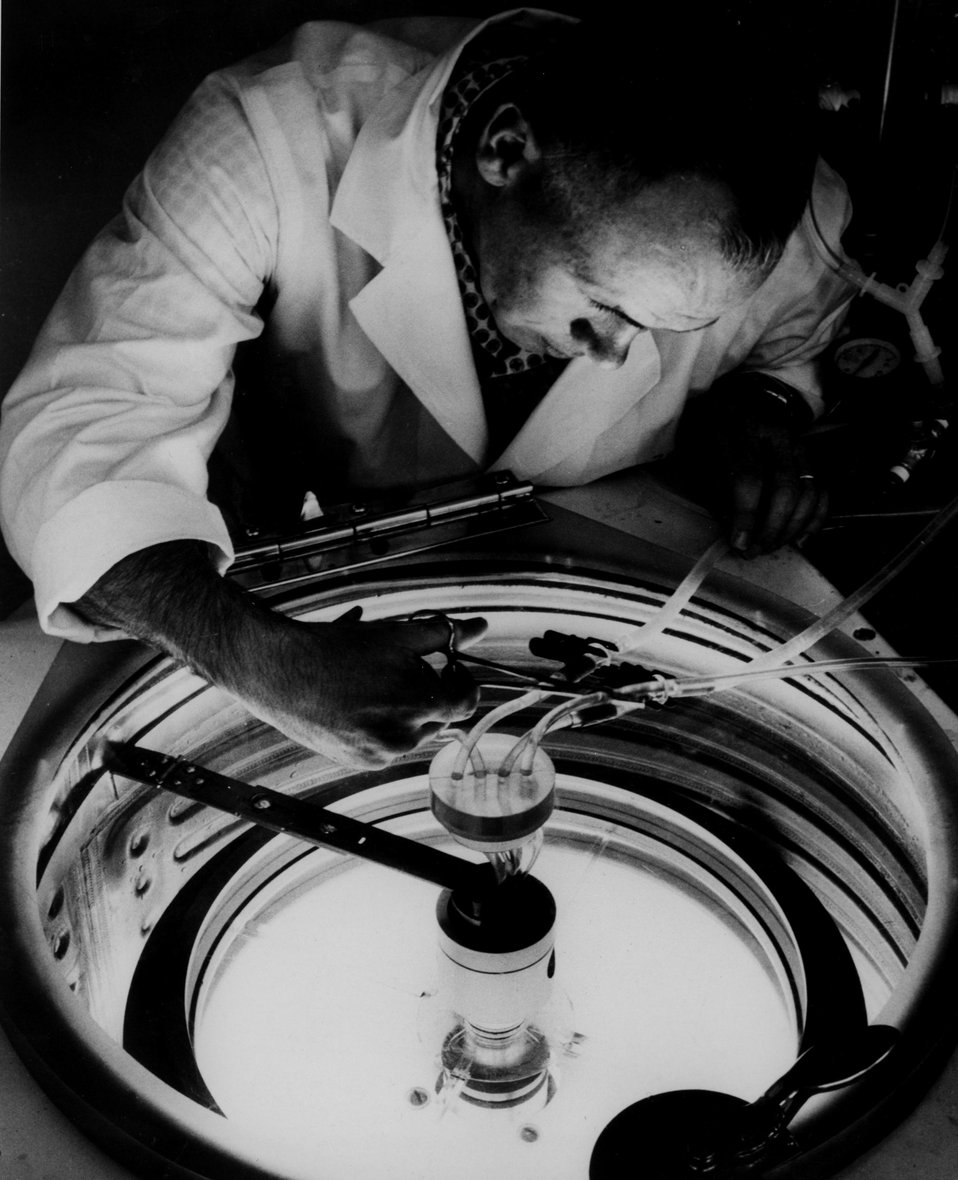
A biologist at Oak Ridge Gaseous Diffusion Plant isolates aging granules from human heart tissue in a zonal centrifuge, part of a joint AEC-NIH Bio-medical Research Program. c. 1965